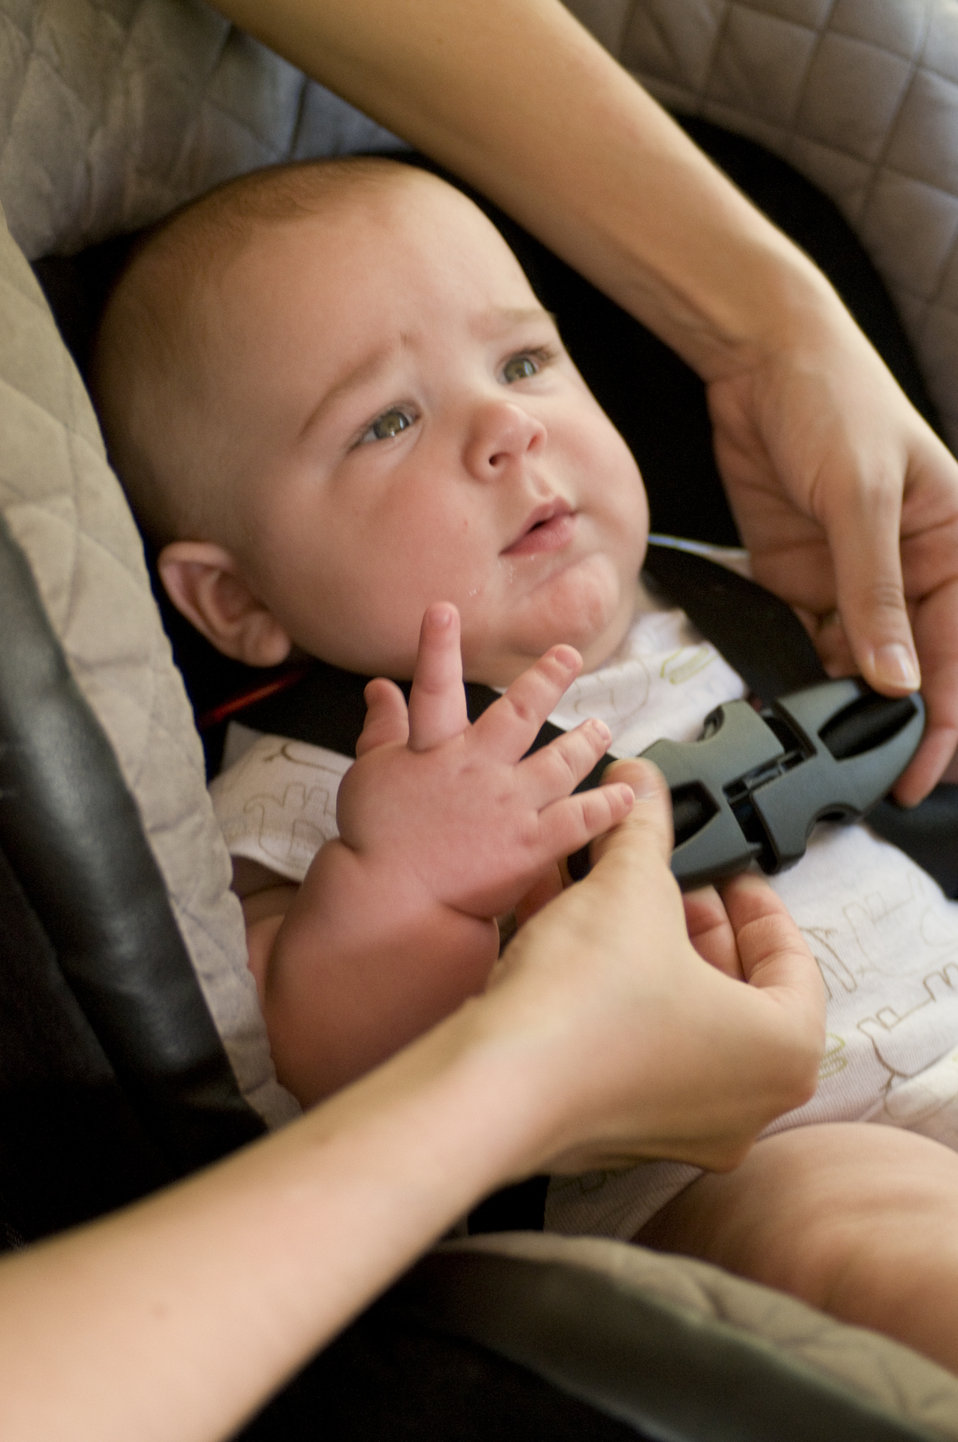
This image depicts a mother in the process of securing her infant child into a back seat-located child safety seat. At this point of the process, she was adjusting her child's fit in the seat, ensuring both the baby's safety and comfort.